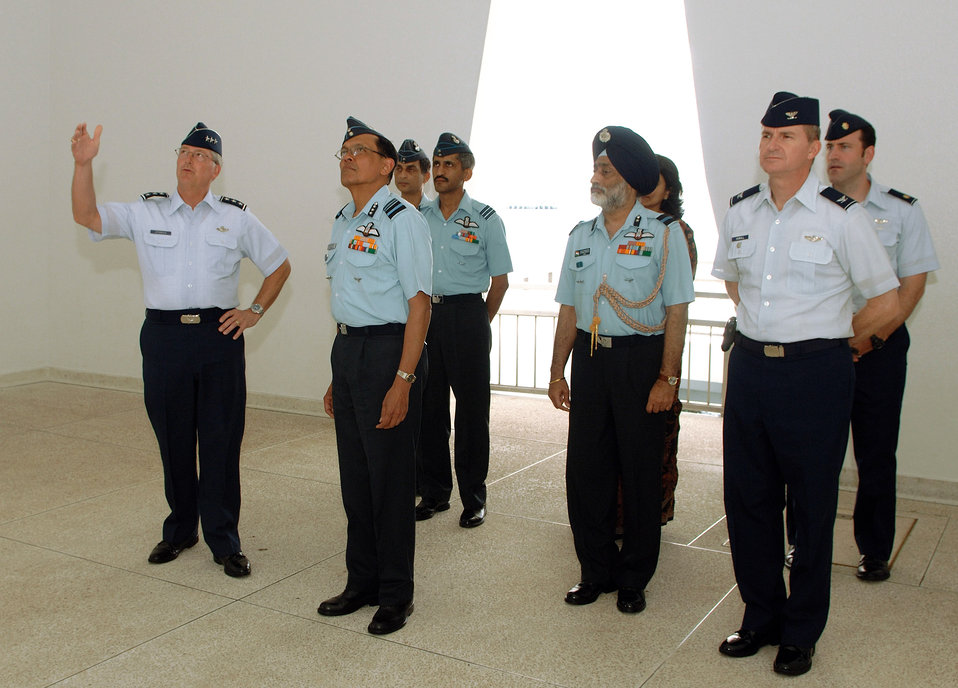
U.S., Indian air forces discuss partnership efforts

Lt. Gen. Chip Utterback leads a tour of the USS Arizona Memorial for Air Marshal Dinesh Chandra Kumaria and others March 26 at Pearl Harbor, Hawaii. General Utterback is the 13th Air Force commander. Air Marshal Kumaria is the director of general operations for the Indian air force.